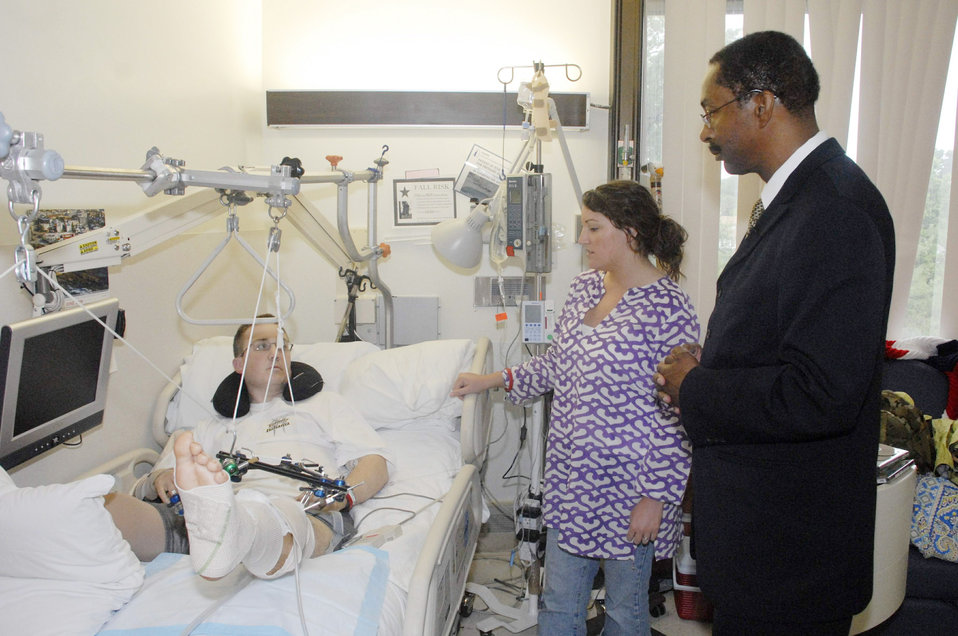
Wounded warrior program assists Airmen, families

Dennis Fritz chats with Staff Sgt. David Flowers and his wife, Elizabeth, about the care they have received June 19 at Walter Reed Army Medical Center in Washington, D.C. Sergeant Flowers, an explosive ordnance disposal member deployed to Afganistan from Barksdale Air Force Base, La., has been at Walter Reed for a month following suffering serious injury by an improvised explosive device. Mr. Fritz is the Walter Reed Army Medical Center recovery care coordinator.